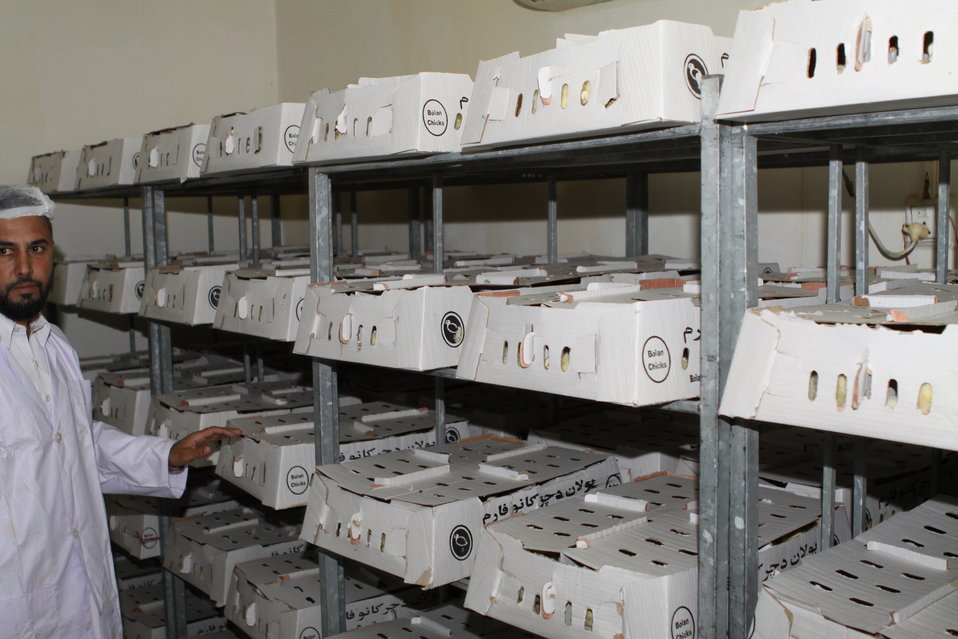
Bolan Poultry Farm